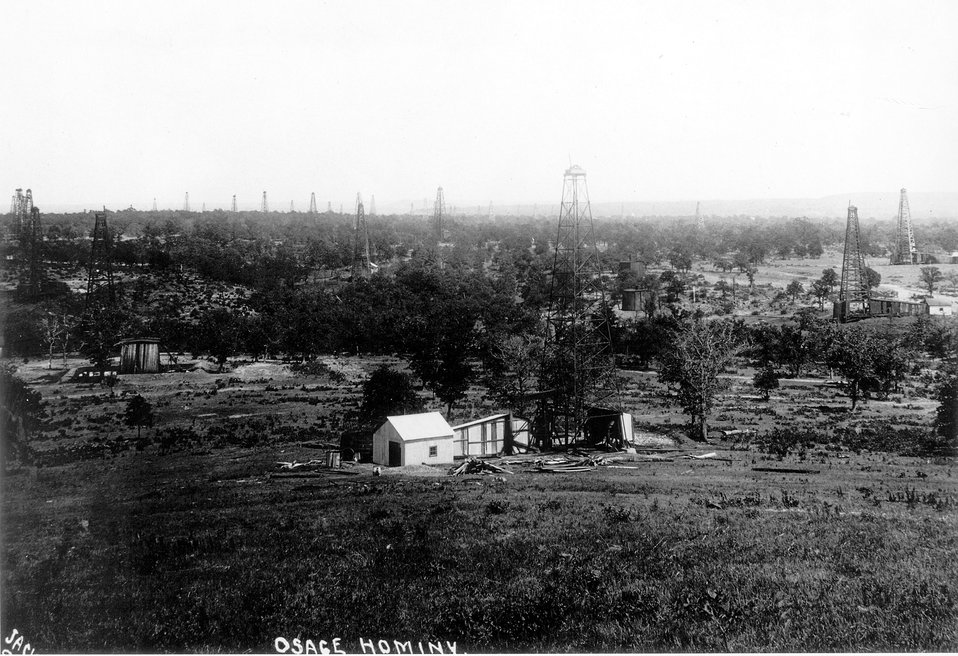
Oklahoma Oil field Osage Hominy, C.1918.